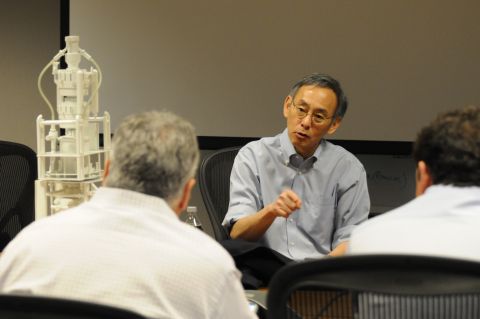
CHU bp Larger

U.S. Energy Secretary Steven Chu confers with scientific experts and BP officials on the 'top kill' strategy